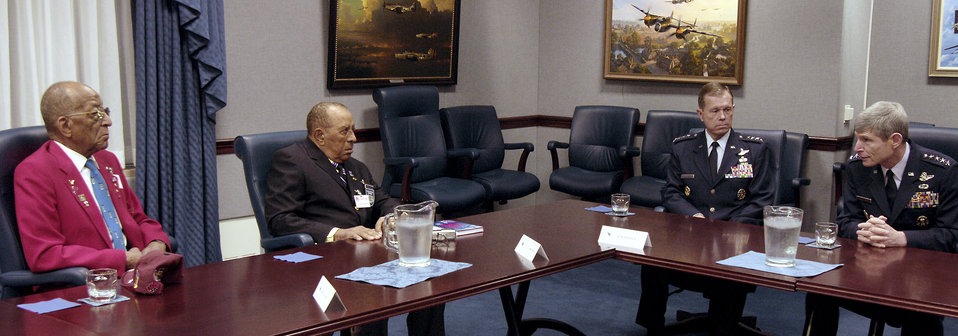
Tuskegee Airmen visit Pentagon

Air Force Chief of Staff Gen. Norton Schwartz (right) and Vice Chief of Staff Gen. William Fraser III meet with Tuskegee Airmen James Warren and Phillip Broome in the Pentagon April 20. Four Tuskegee Airmen and retired Lt. Gen. Russell Davis were in Washington to meet with the two Air Force leaders prior to departing on a tour of units in Southwest Asia including the 332nd Air Expeditionary Wing whose origins trace back to the 332nd Fighter Group and the Tuskegee Red Tail Flyers.